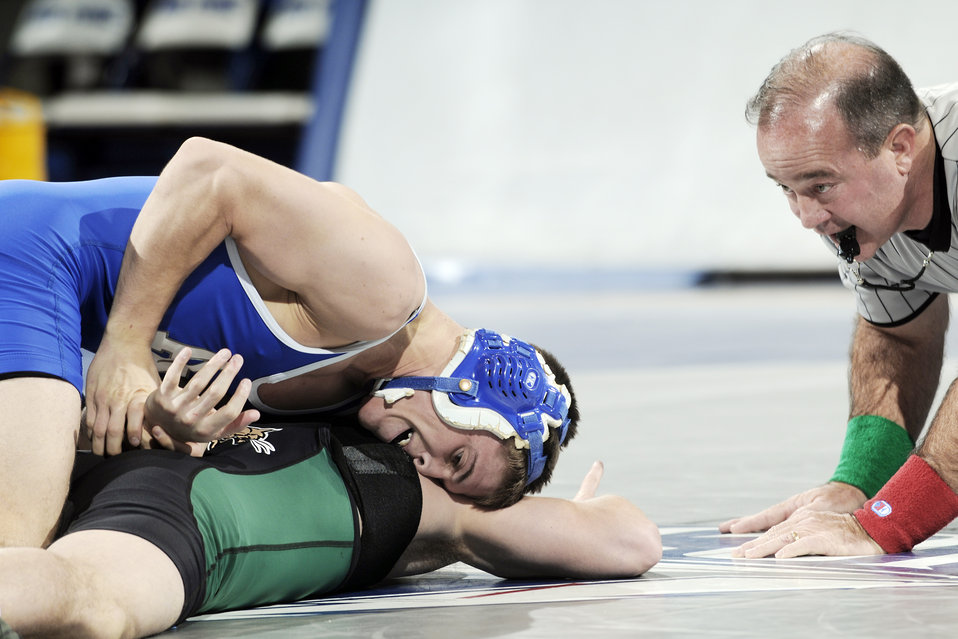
Falcons lose in first home contest

Air Force Academy junior Andrew Zwirlein wrestles Ohio University's Kyle Ciccarello in the 125-lb. weight class during the Falcons' first home contest of the season at the Academy's Clune Arena Dec. 11, 2009. Zwirlein won the match 10-5, but Air Force lost the contest against Ohio, 35-3.